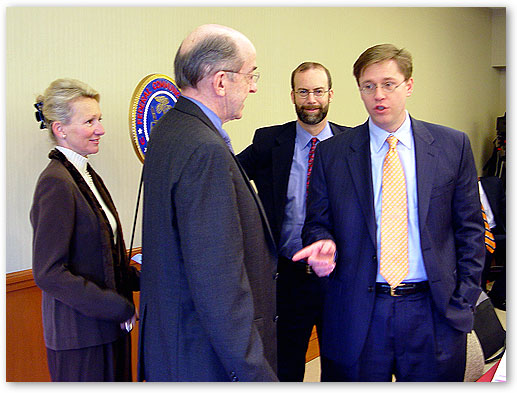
FCC Chairman Kevin Martin and Commissioners Tate, Copps, and Adelstein before FCC Commission meeting. February 10, 2006, Keller, Texas.